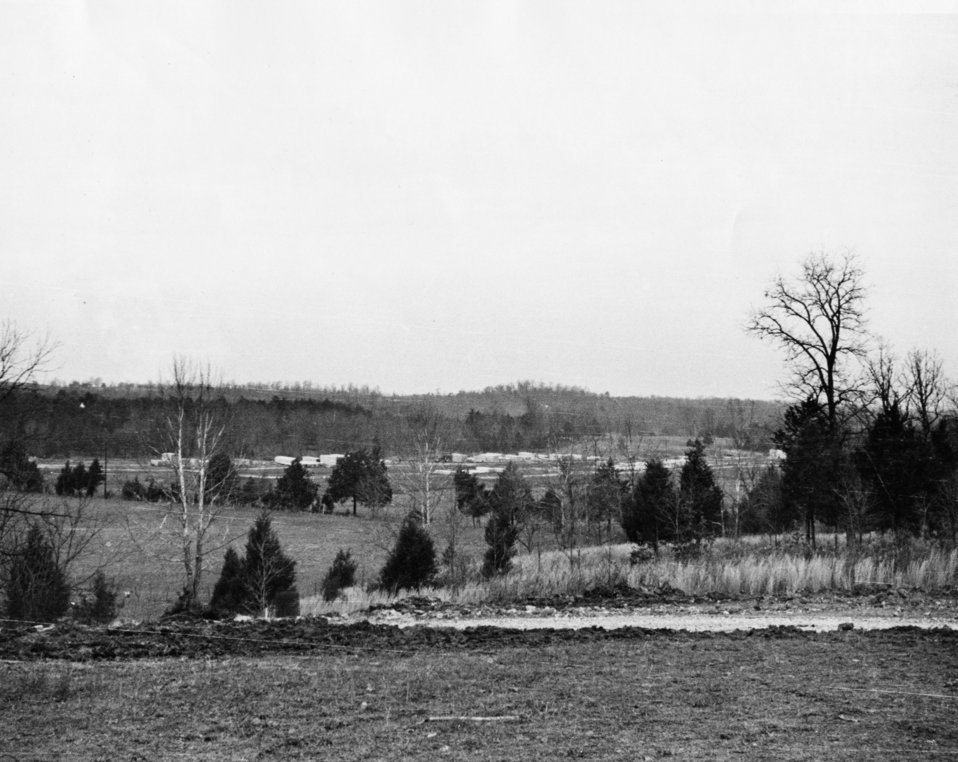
Business activity at Oak Ridge